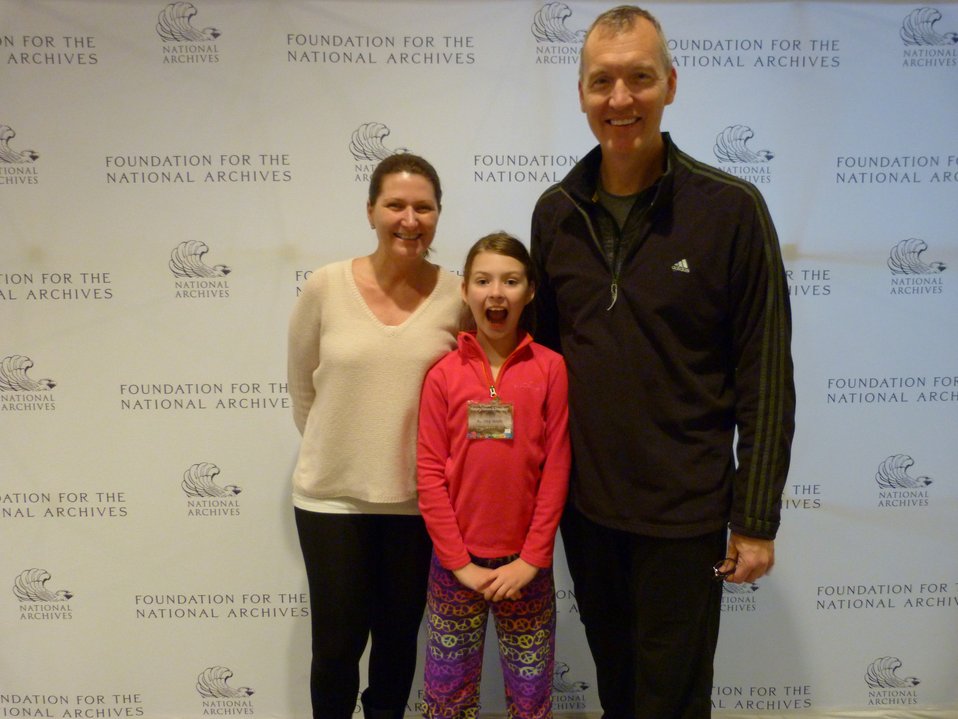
Rotunda Sleepover

Rotunda Sleepoverr; Photo provided by The Foundation for the National Archives